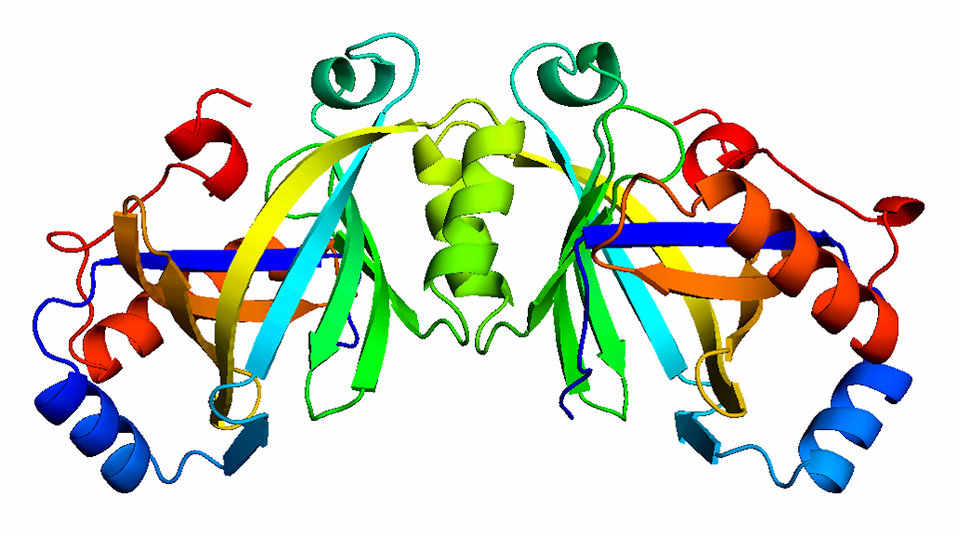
Plague Enzyme Structure

Ribbon rendering of the structure of AC-IV in Yersina pestis as determined at NIST. The enzyme is a dimer (two identical subunits around a vertical axis), and each of the two subunits forms a central barrel made of eight strands surrounded by short helices. The active site is believed to lie inside the barrel.